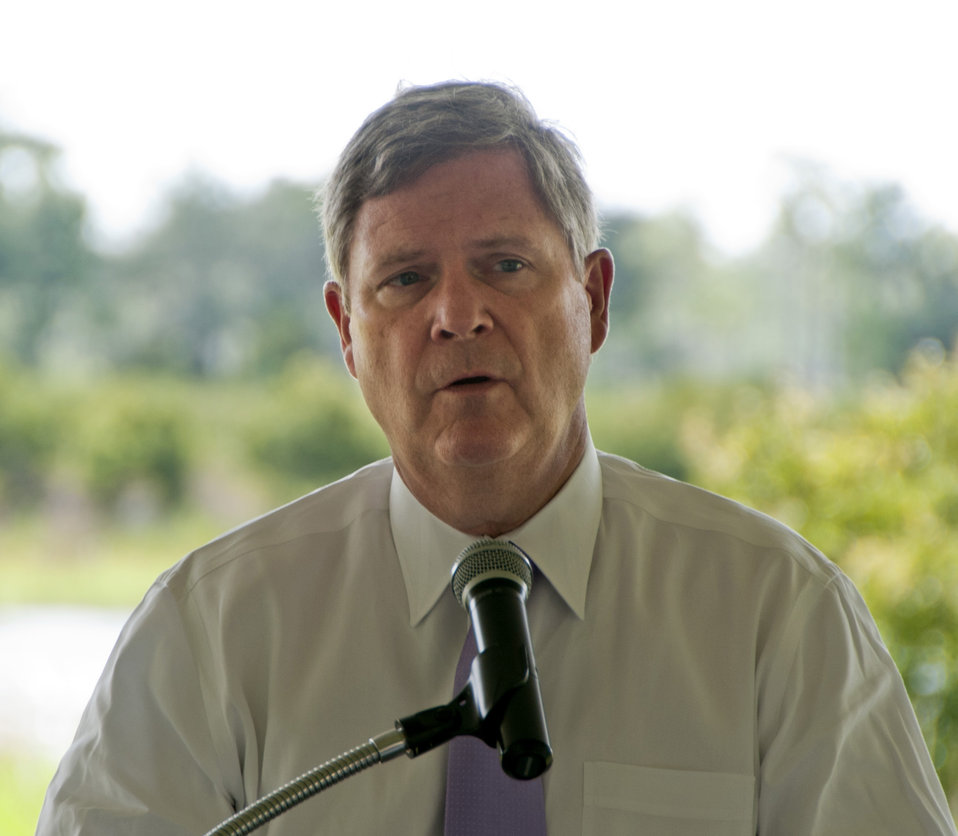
U.S. Department of Agriculture Secretary Tom Vilsack discussed Everglades restoration and announced significant Wetlands Reserve Program (WRP) funding for projects in the Northern Everglades at an America's Great Outdoors event on Friday, July 13, 2012 in Kissimmee, FL.